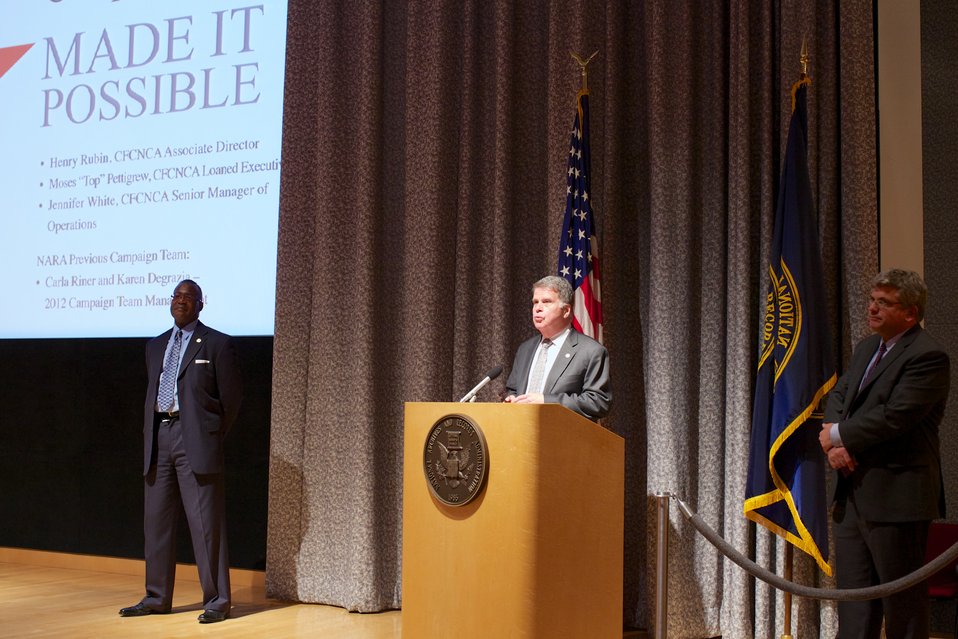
CFC Recognition Event